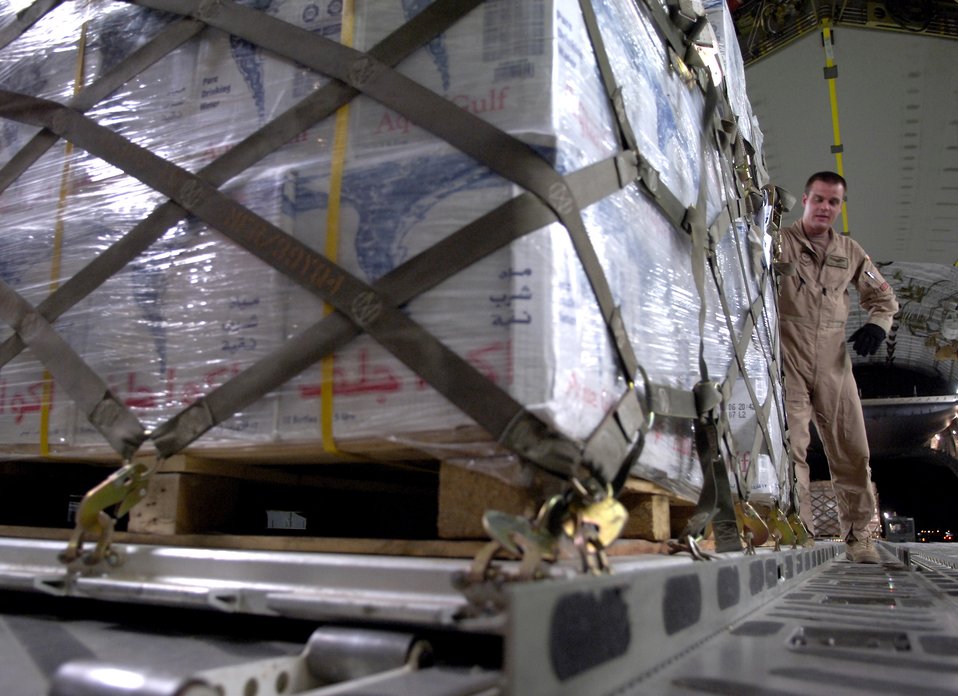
Supplies bound for Cyprus

First Lt. Kyle Hamilton pushes a pallet of water into place as the crew loads the plane in Southwest Asia before departing for Cyprus on July 22. C-17 Globemaster III crews from the 816th Expeditionary Airlift Squadron are filling their cabins with pallets of supplies such as water, Meals, Ready to Eat and cots for the American citizens leaving Lebanon. This C-17 transported 17 pallets, about 64,000 pounds, of cargo to Cyprus on this mission. Lieutenant Hamilton is a co-pilot with the 816th EAS.